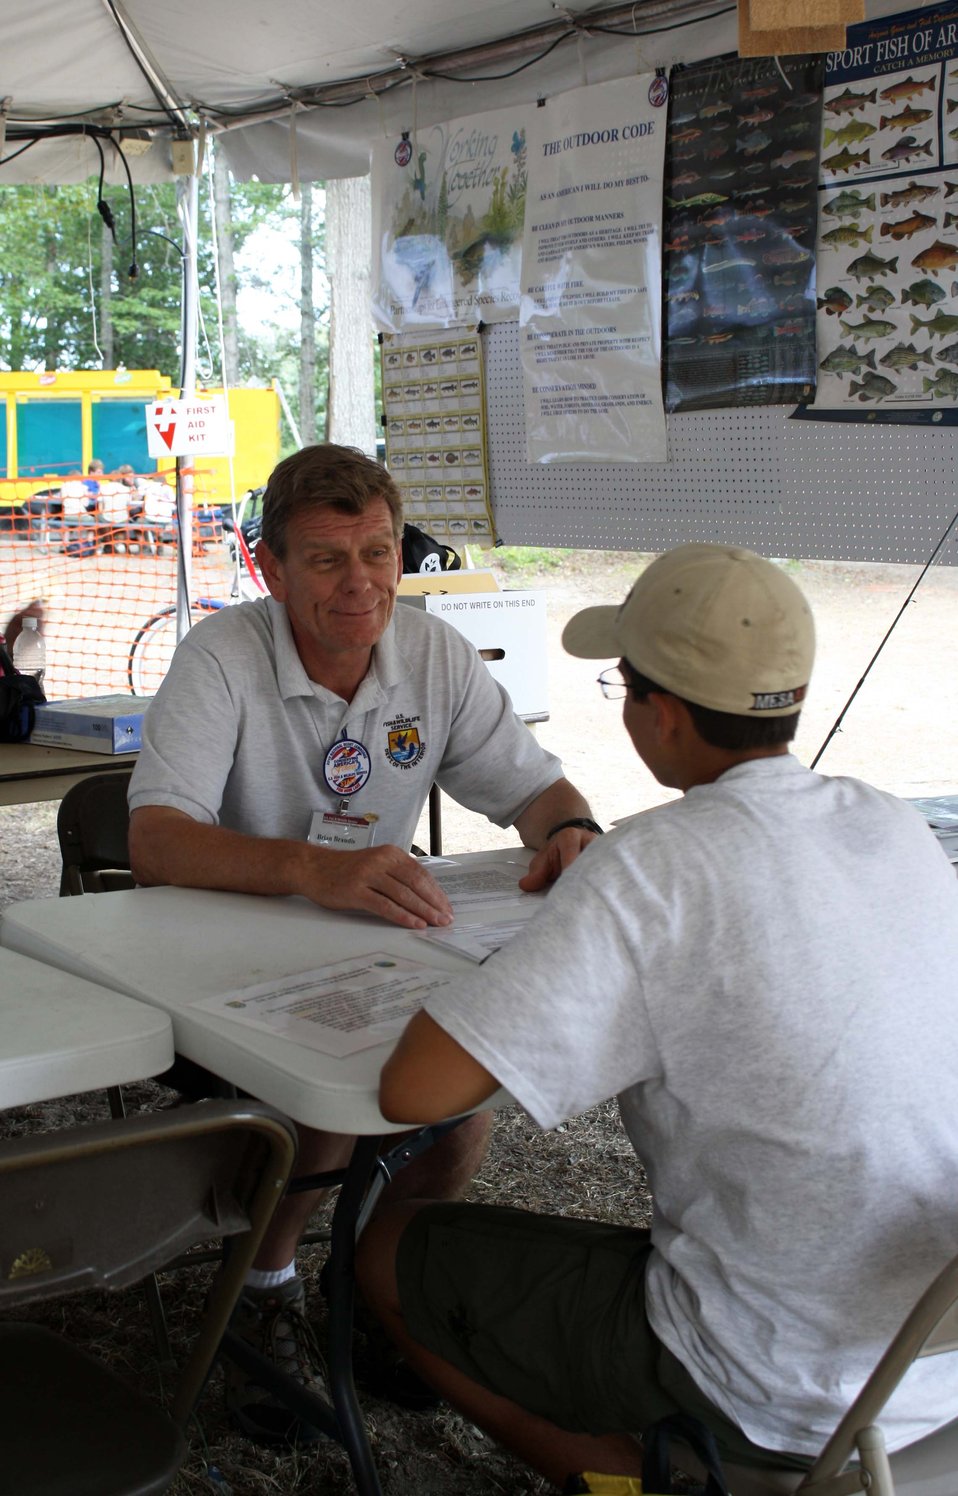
Boy Scout Jamboree 2010